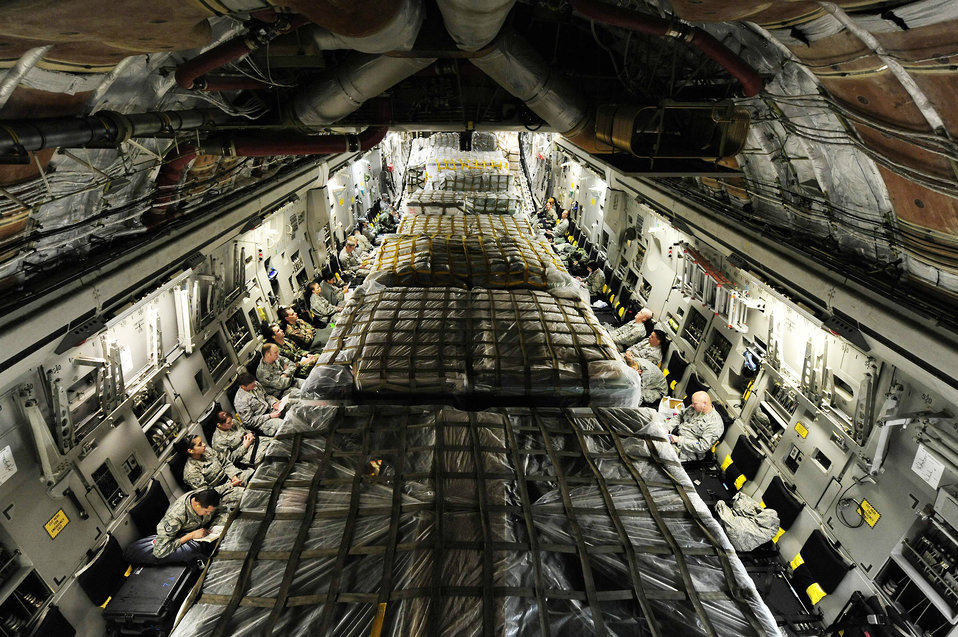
Airmen build hospital in Chile

Airmen sit on a C-17 Globemaster III awaiting departure March 8, 2010, from Lackland Air Force Base, Texas. The Airmen are part of an Air Force Expeditionary Medical Support team that deployed to Angol, Chile, to augment medical care for more than 110,000 Chileans in the region.